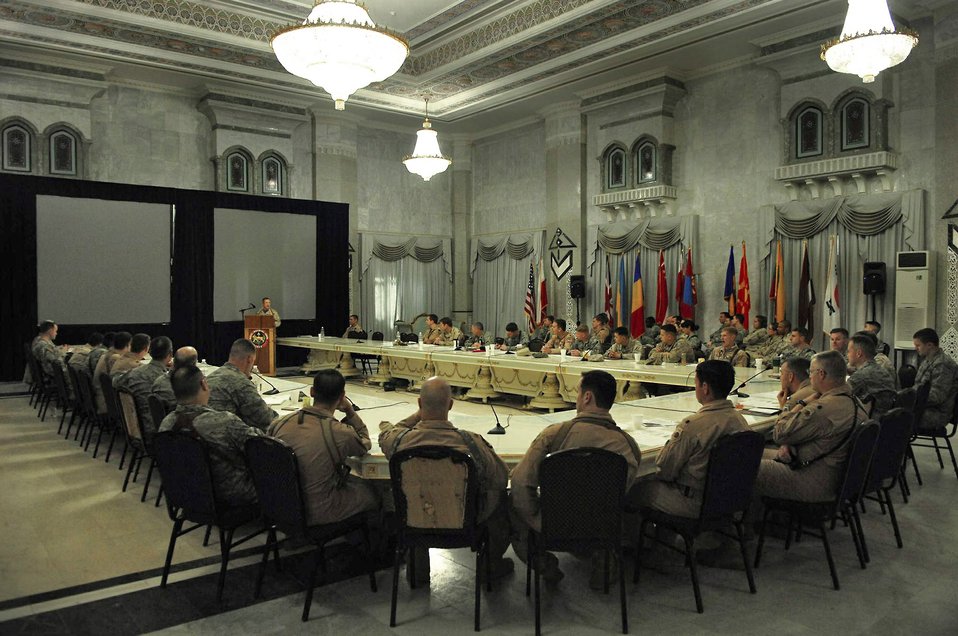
Conference addresses key issues

More than 100 coalition members met March 3 to 5 at Al-Faw Palace in Baghdad to discuss ways to better synchronize airpower with future ground operations across Iraq.